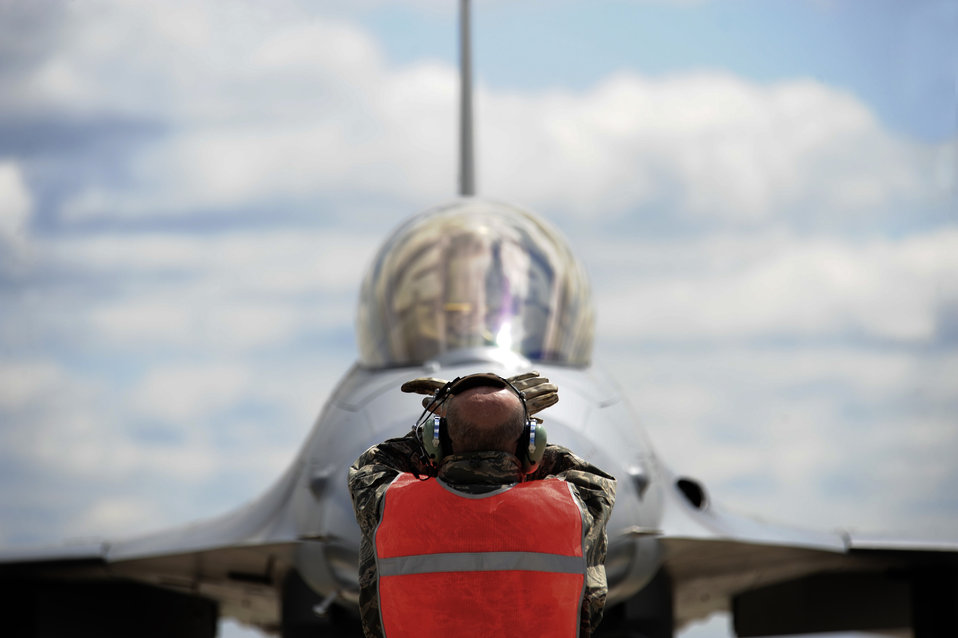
Maple Flag 42

Master Sgt. Jeff Knoll, an F-16 Fighting Falcon crew chief assigned to the 114th Fighter Wing, Sioux Falls, S.D. Air National Guard, prepares to marshal out Capt. Jeremy Doohen for a training mission during exercise Maple Flag 42 at 4 Wing Cold Lake, Canada, June 4. Maple Flag is a Canadian-sponsored and Air Combat Command supported exercise that provides aircrews simulated air and ground combat training to coalition forces in a NATO environment.